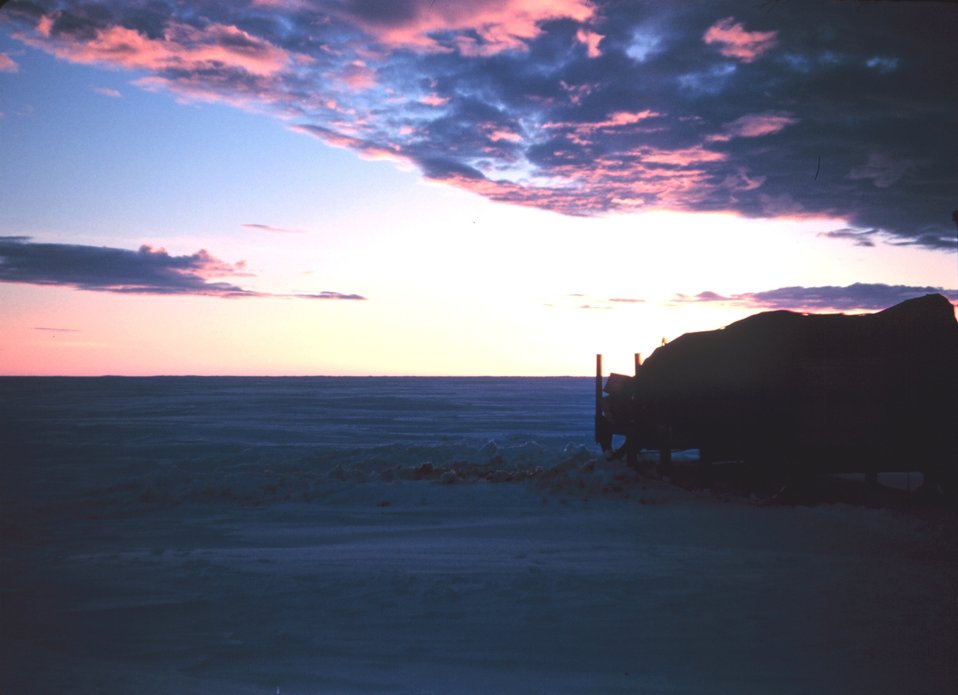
Part of the cat train stopped at twilight